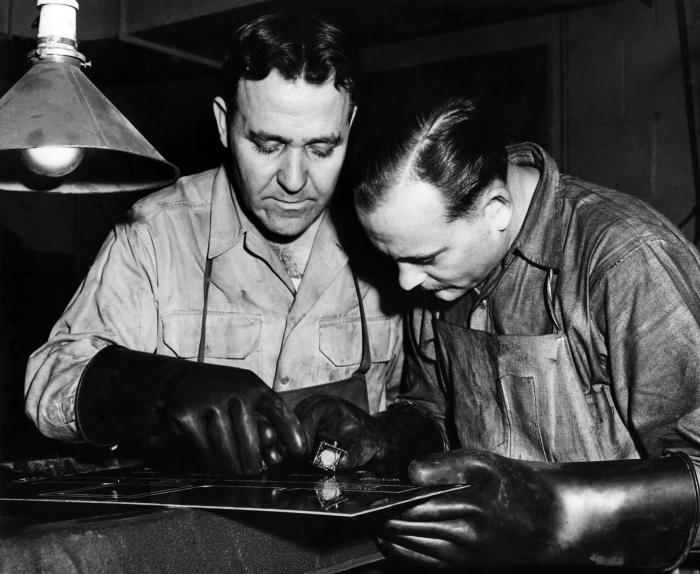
This historic image, provided by the Center for Disease Control's (CDC), National Institute for Occupational Safety and Health (NIOSH), depicted a journeyman etcher instructing an apprentice on the proper methods involved in the photo-engraving process using a photo-sensitized plate. Note that both men were wearing heavy-duty protective gloves, as well as apons which would have guarded them against caustic chemical contaimination. The image was published in the February, 1947, issue of the 'Industrial Bulletin, New York', Pg. 34-35. This image, and many others like it, was used to document the many aspects of various industrial activities, so as to better understand these workplace environments, and their associated hazards. In gaining a better understanding of workplace hazards, protocol-formulating bodies such as NIOSH, are better able to create a safer workplace through substantiation of appropriate safety regulations.